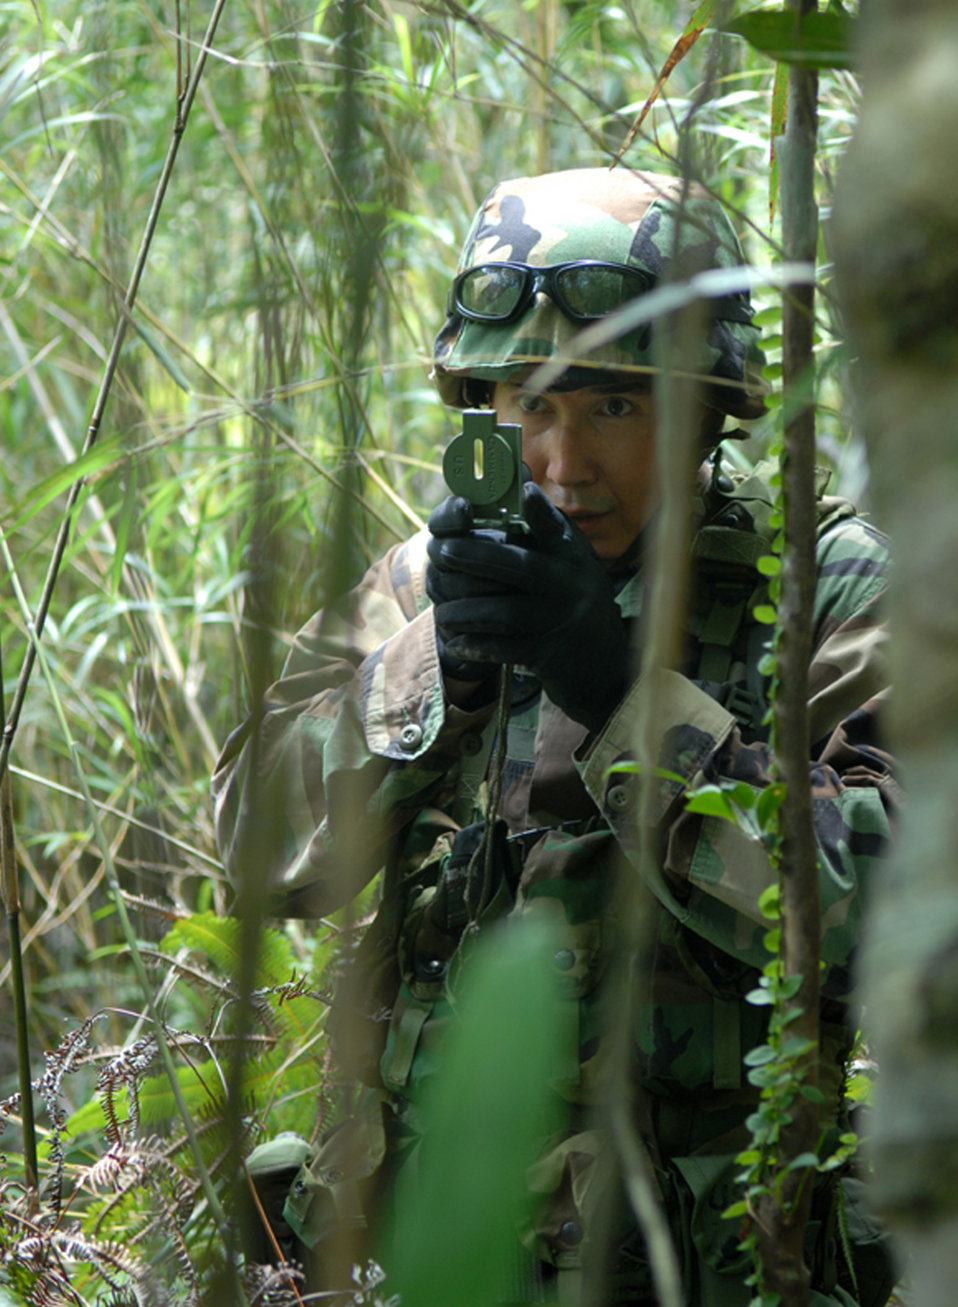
Jungle warfare training

First Lt. Christopher Stob uses his compass on his team's first navigation mission during a weeklong training course at the Jungle Warfare Training Center at Camp Gonsalves, Okinawa, on July 25. Thirty Airmen from the 18th Communications Squadron at Kadena Air Base, Japan, attended the course, which included land navigation and other skills, culminating in an endurance course on the final day. The 18th CS is the first non-combat support unit to go through this training.